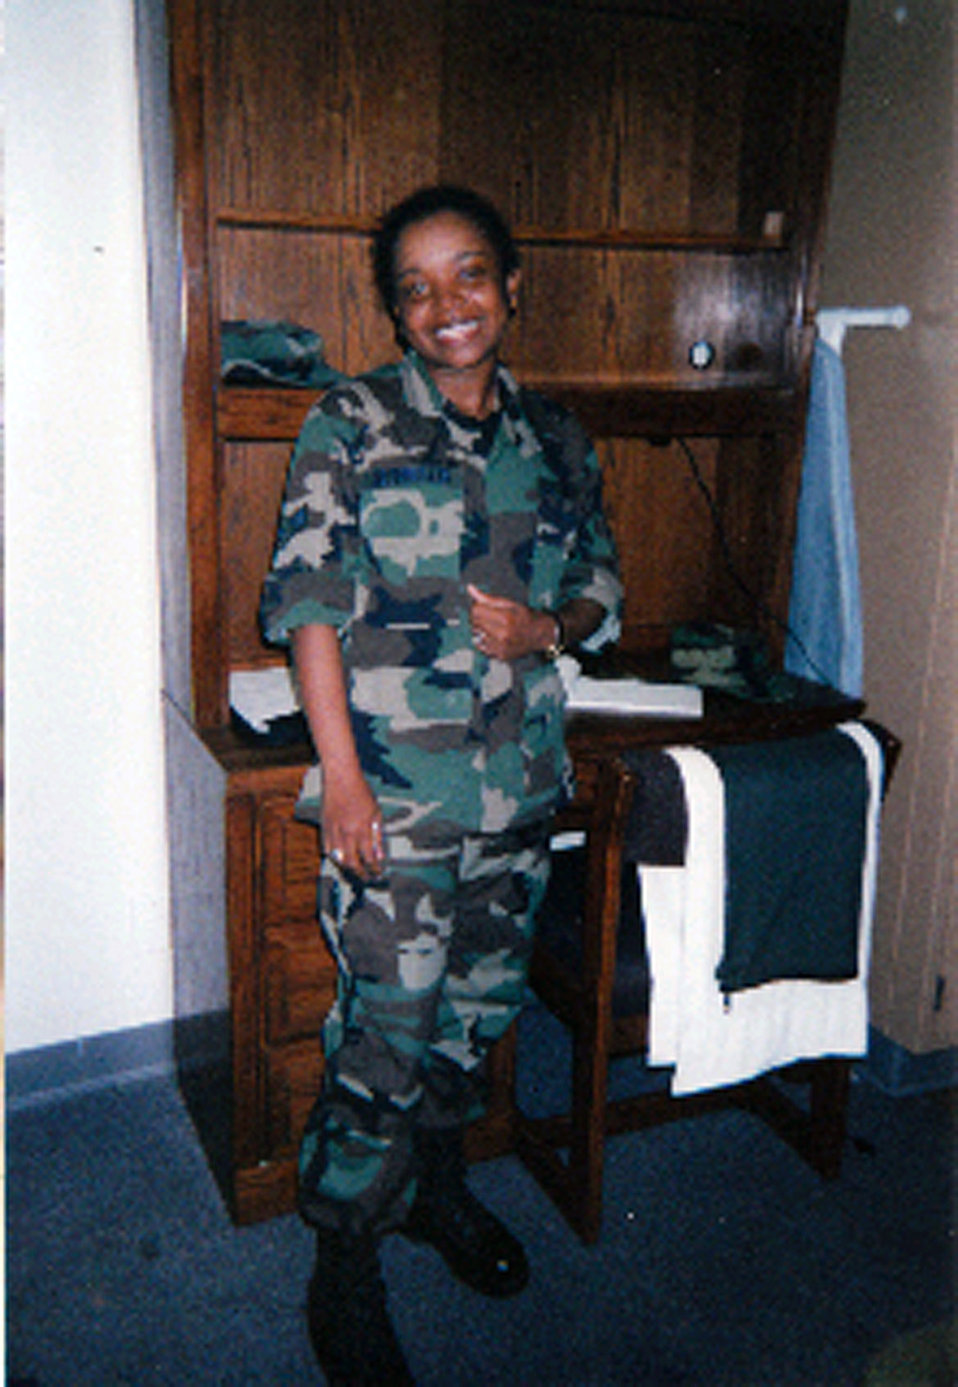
Airman becomes citizen in Pentagon ceremony

Senior Airman Cassandra Obermuller Brandon joined the Air Force Reserve in 2002 after witnessing the Sept. 11, 2001, terrorist attacks in New York City. She now serves full-time as the unit training monitor for the 69th Aerial Port Squadron at Andrews Air Force Base, Md.